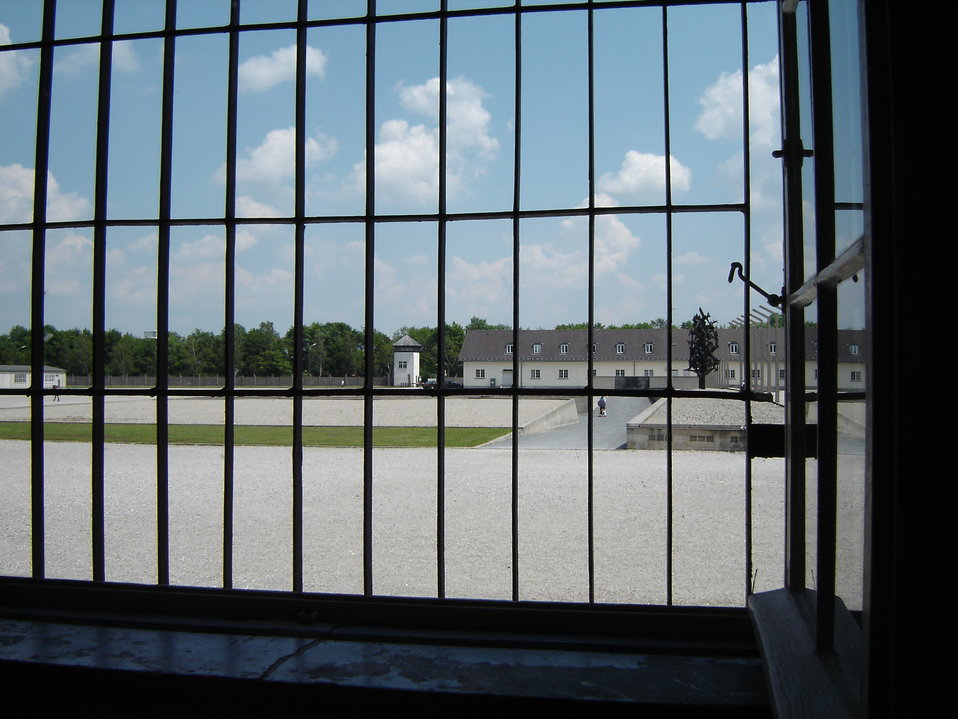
Picture of roll-call area from inside one of the buildings at Dachau concentration camp in Dachau, Germany taken June 16, 2005.